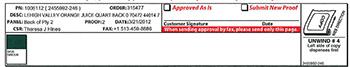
RECALLED – Orange Juice

March 3, 2014 – Product Recall – Lehigh Valley Dairy Conducts Voluntary Recall of Lehigh Valley, Swiss Premium, and Price Chopper Brand Orange Juice Because It May Contain Undeclared Allergen (Milk).